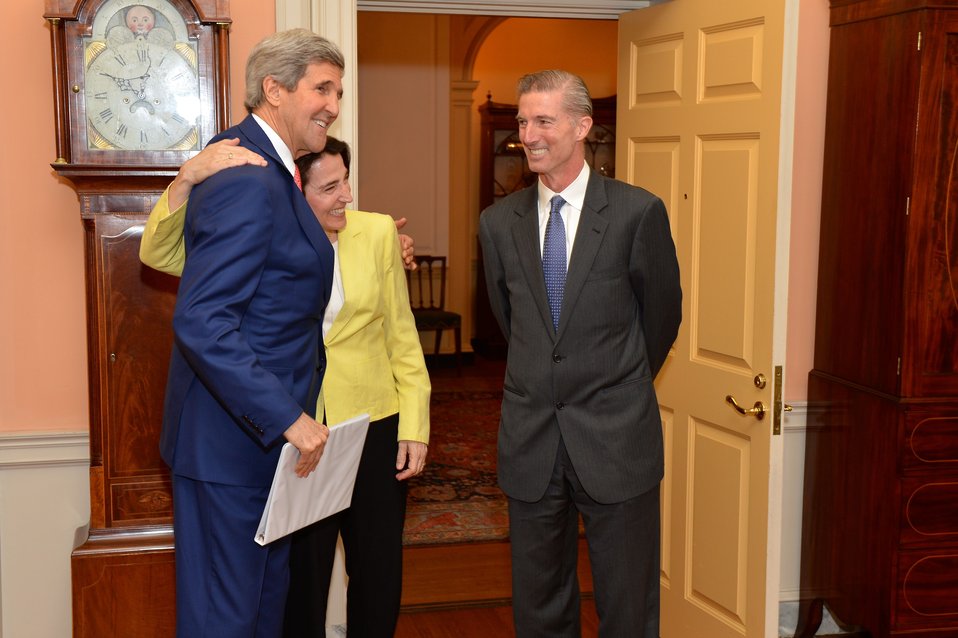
Secretary Kerry Greets Sarah Sewall

U.S. Secretary of State John Kerry greets Sarah Sewall and her husband, Tom Conroy, before swearing her in as Under Secretary of State for Civilian Security, Democracy, and Human Rights at the U.S. Department of State in Washington, D.C., on April 14, 2014.